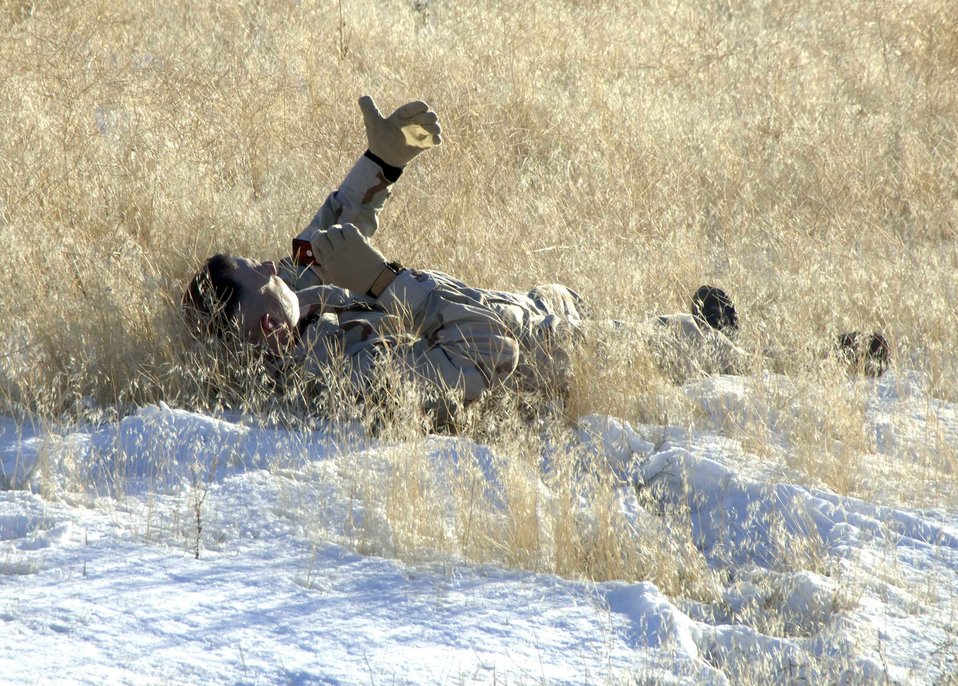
Train to survive

MOUNTAIN HOME AIR FORCE BASE, Idaho -- While learning to adapt and survive is one of the focuses of code of conduct continuation training, the main goal is to get home, according to Tech. Sgt. Micheal Ferguson. That's why he teaches students a variety of signaling techniques that are guaranteed to catch the eye of a passerby.